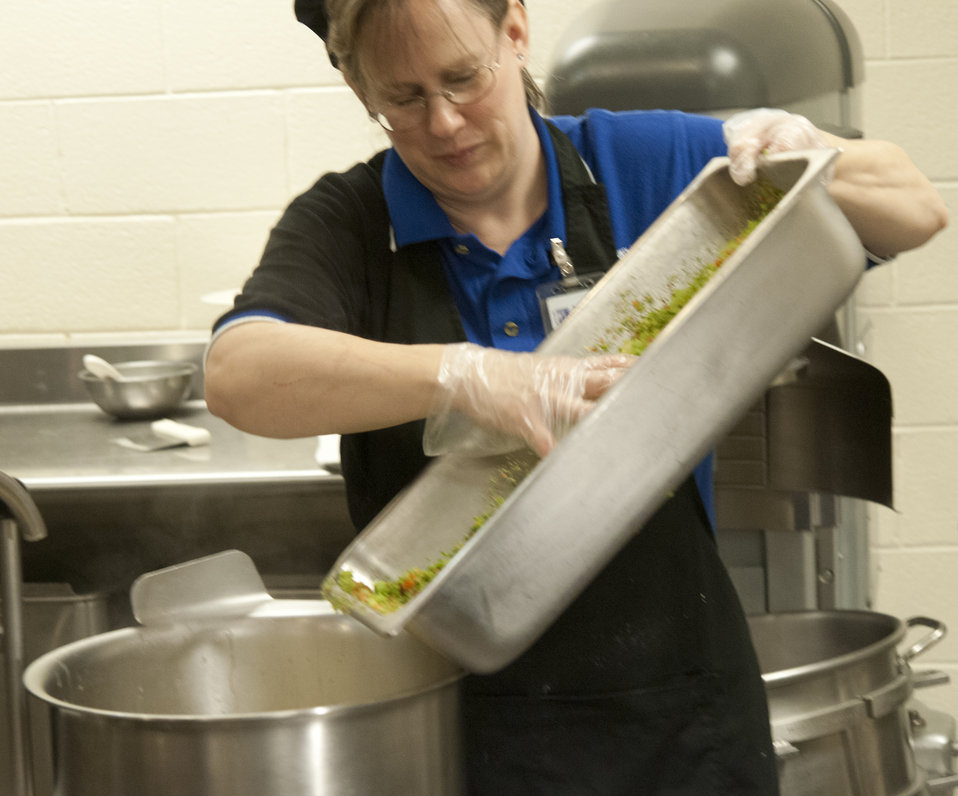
School lunch staff and students enjoy the new school lunch menu created to meet the new standards at the Yorkshire Elementary School in Manassas, VA on Friday, Sept. 7, 2012.